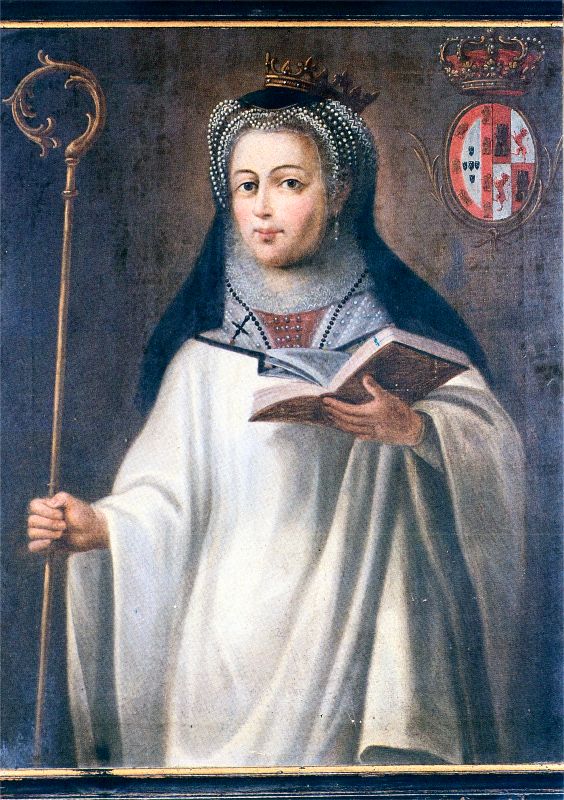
014 Arouca